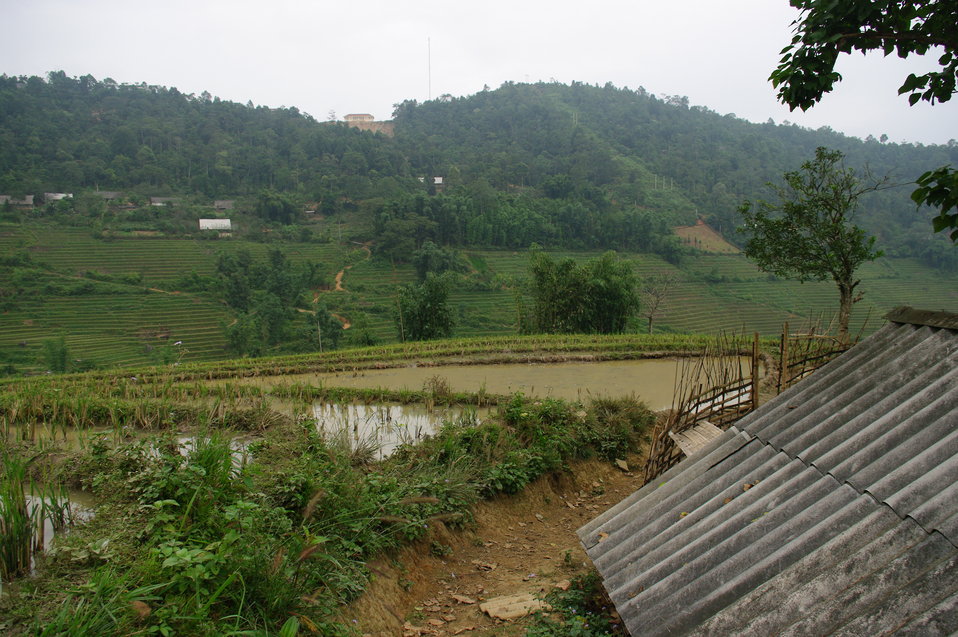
Photo from Sapa in northern Vietnam